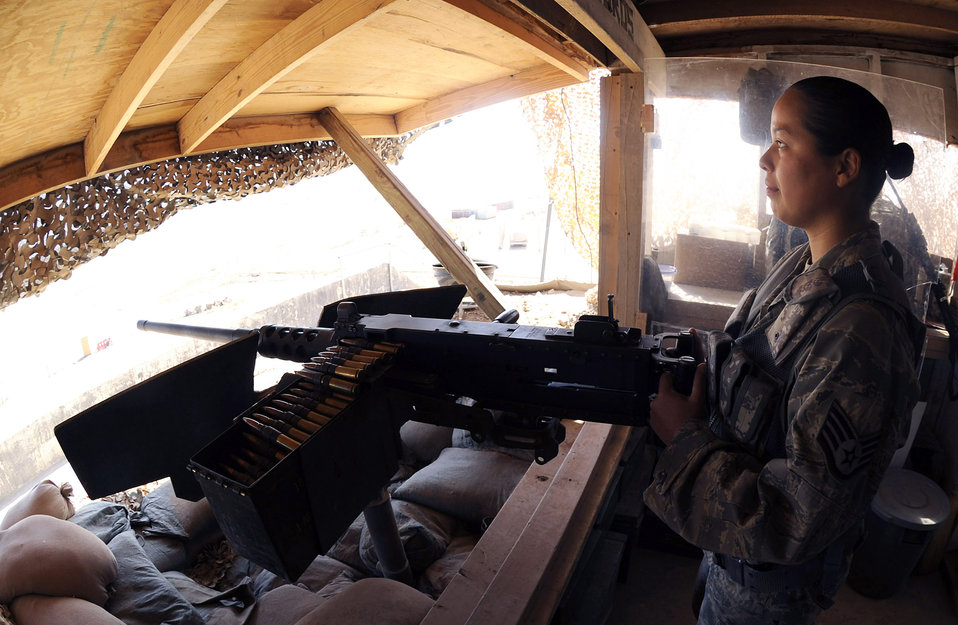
Airmen provide show of force

Staff Sgt. Vida Reveles observes the flightline at Sather Air Base, Iraq, while manning a .50 caliber machine gun March 26. Sergeant Reveles provides [a]show of force for the base making sure that no unauthorized personnel are allowed on the base. Sergeant Reveles is one of a few security forces members qualified on the .50 cal here. Sergeant Reveles is a 447th Expeditionary Security Forces Squadron heavy weapons operator.